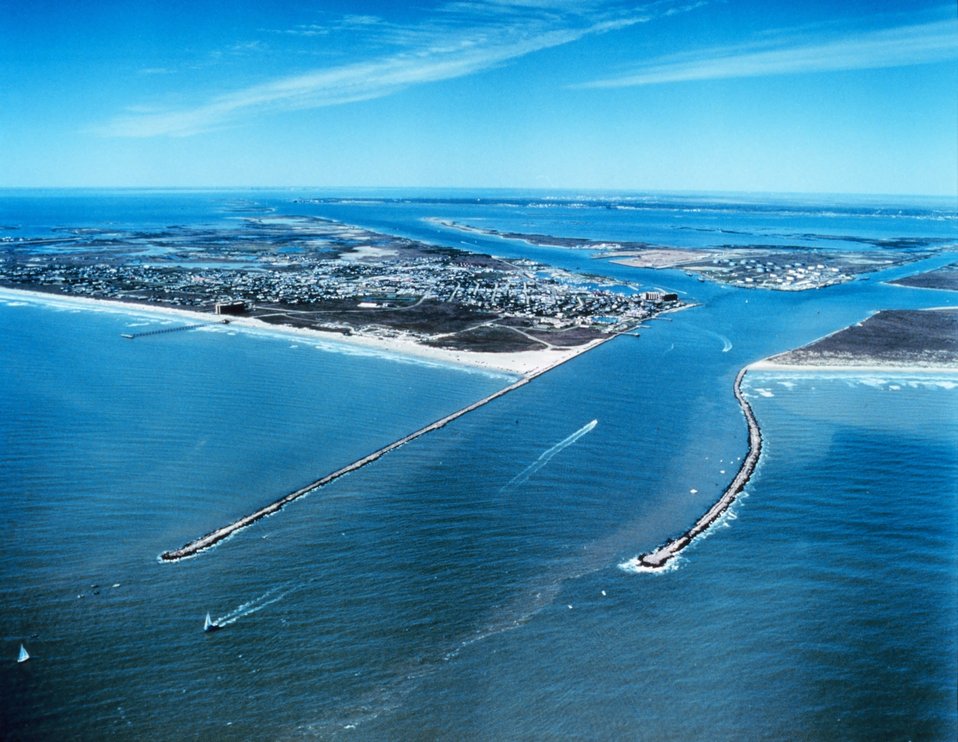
2755 North Latitude 9709 West Longitude.